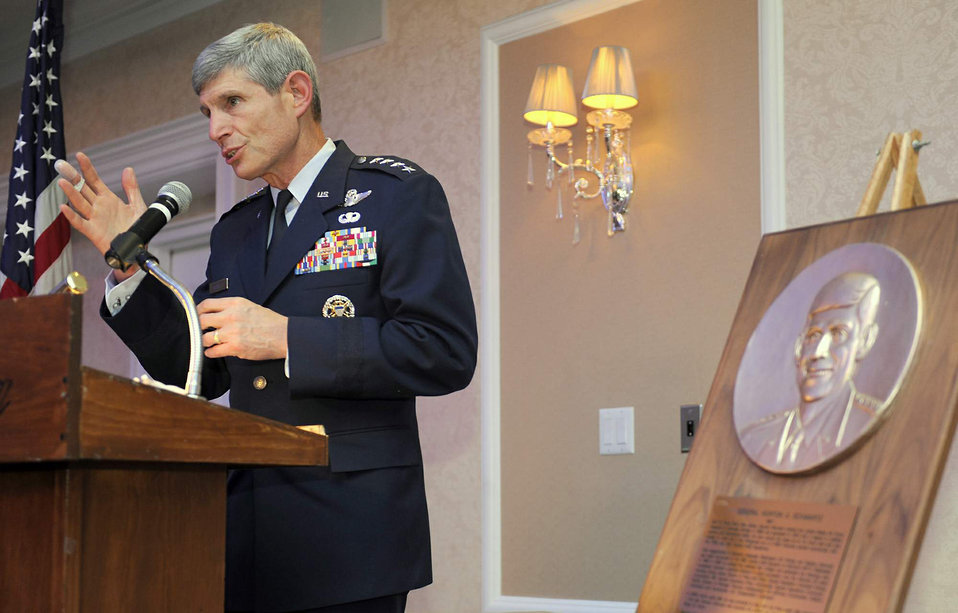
New Jersey Aviation Hall of Fame

Air Force Chief of Staff Gen. Norton Schwartz gives his keynote speech May 11, 2011, during a ceremony honoring four inductees into the New Jersey Aviation Hall of Fame in Teterboro, N.J. General Schwartz, who is from Toms River, N.J., was one of the four inducted.